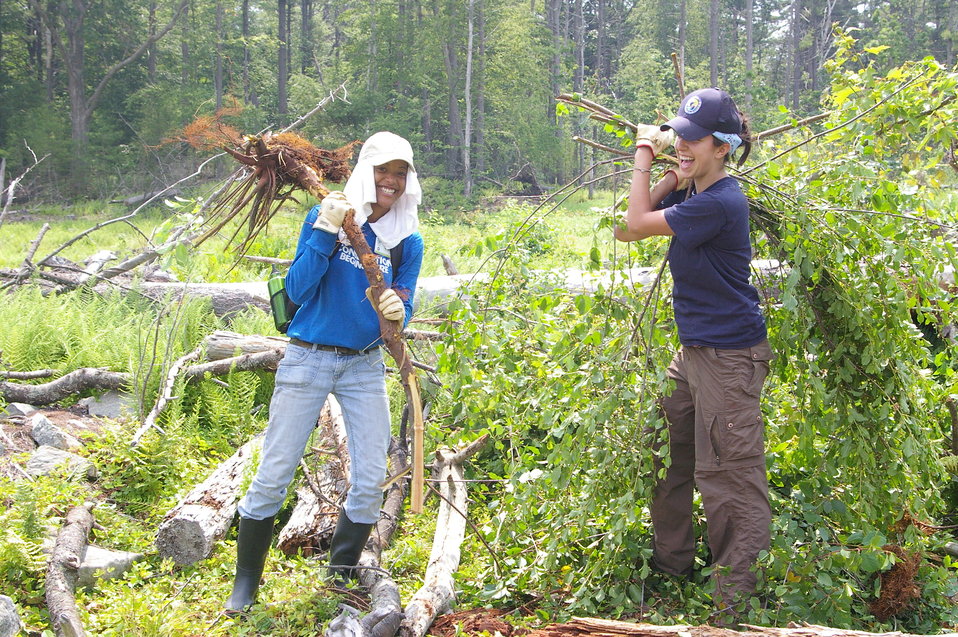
Pulling invasive species

A CDIP intern and a refuge volunteer pull invasive species at Rachel Carson National Wildlife Refuge.